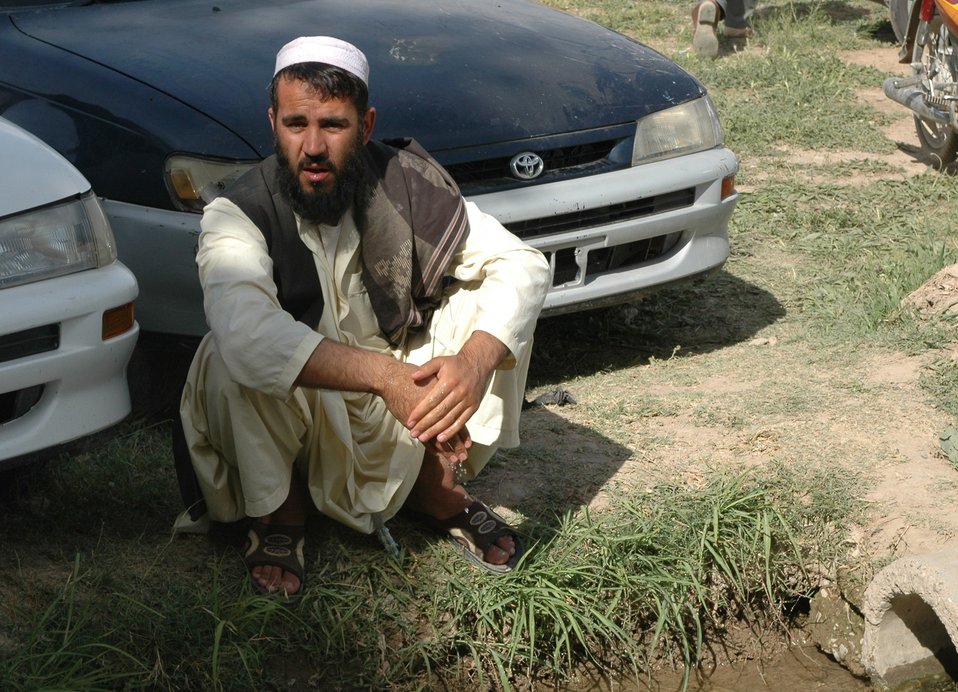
Dr Shah Visits Argandab April 10, 2010